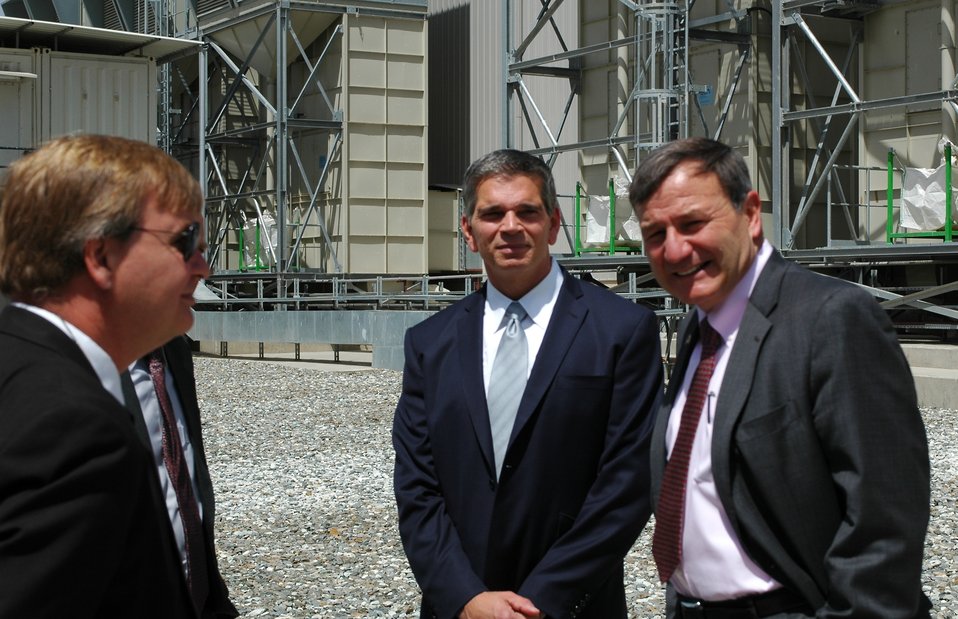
105 MW Tarakhil Power Plant Handover